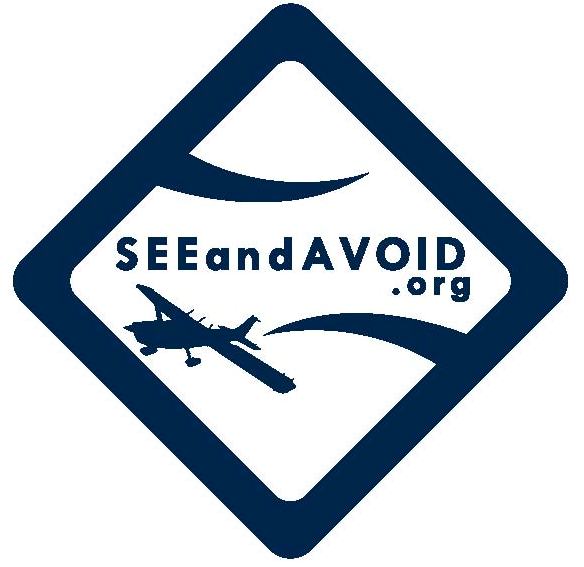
Pilot crusades for safer skies

The SeeAndAvoid Web site was created to help eliminate midair collisions and reduce close calls through continuous flight safety and proper flight planning.